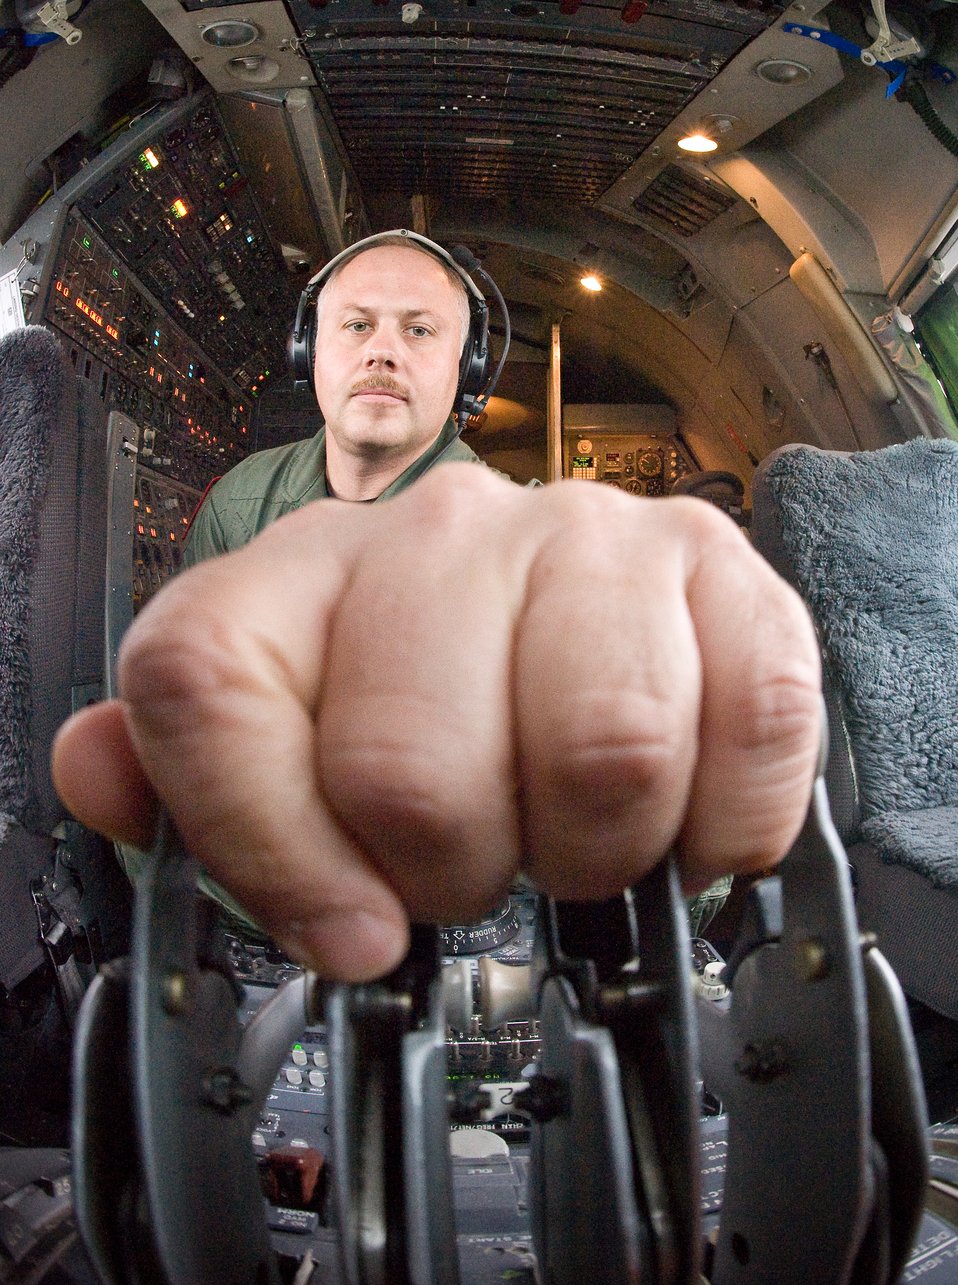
Full throttle ahead

Master Sgt. Dan Bloomquist sets the throttles of the E-4B as part of his preflight duties aboard the national airborne operations center based at Offutt Air Force Base, Neb. Sergeant Bloomquist is a flight engineer with the 55th Wing.